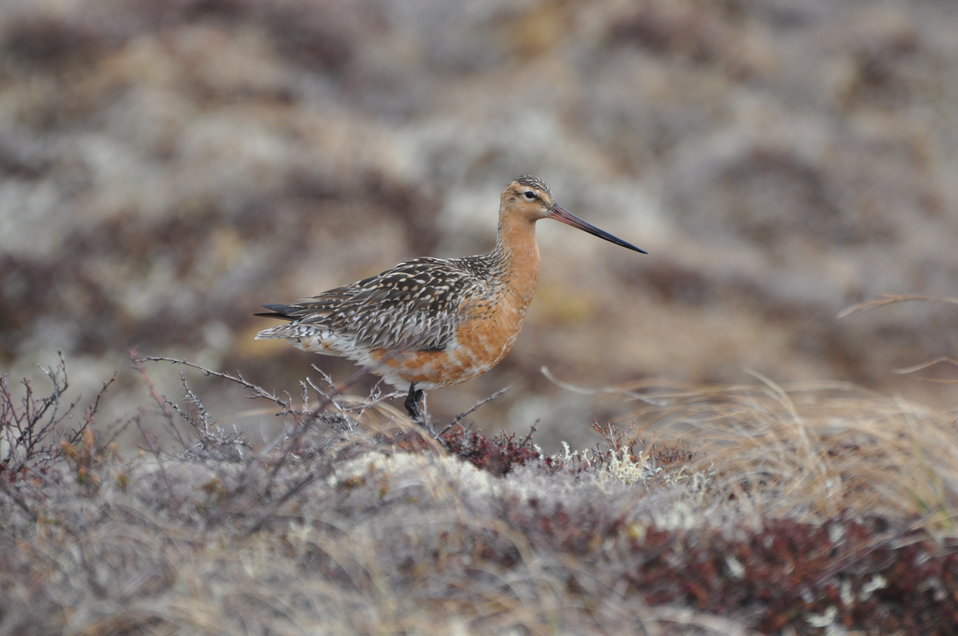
Bar-tailed Godwit

Andreafsky wilderness, Yukon Delta National Wildlife Refuge